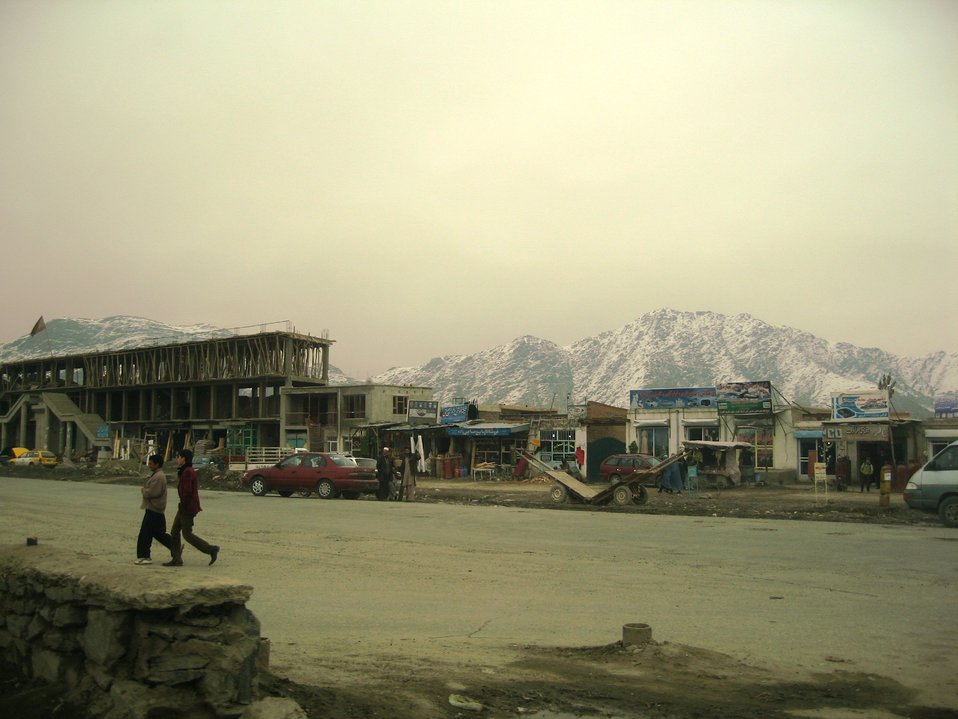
Kabul, Afghanistan

New construction in Kabul, Afghanistan.